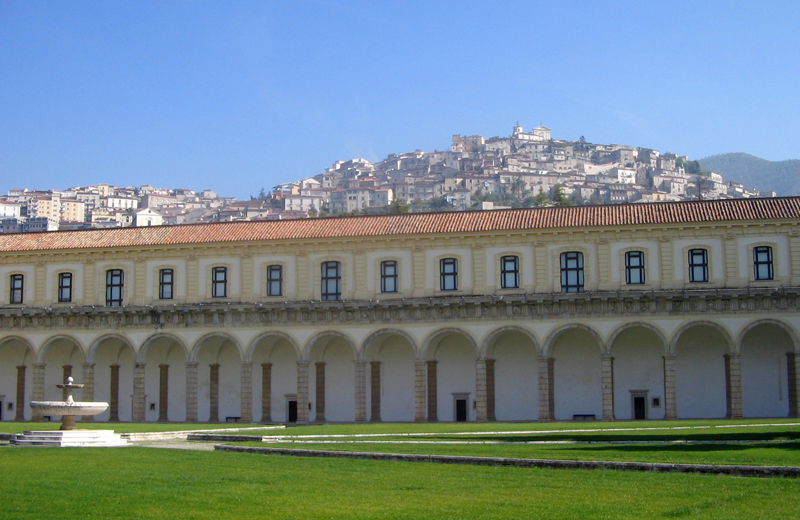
Italiano: Panorama di Padula (SA) dalla Certosa di San Lorenzo - Foto D. Pennisi.